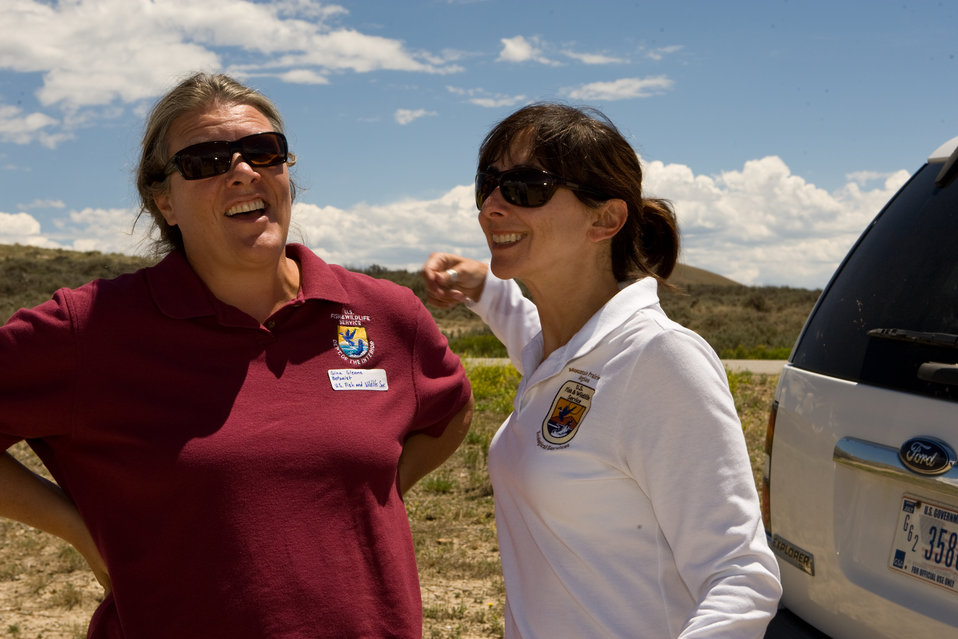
Colorado Rare Plant Conservation Initiative

The Colorado Rare Plant Conservation Initiative (RPCI) is a partnership of 23 statewide and regional agencies, private organizations, and academic institutions working to conserve 121 rare plants in Colorado. As part of these efforts the group developed the Colorado Rare Plant Conservation Strategy, developed Best Management Practices to reduce energy development impacts, addressed climate change, and developed focused strategies for the conservation of individual species at eight priority landscapes. The group has also worked to coordinate volunteer efforts for plant conservation across the state.